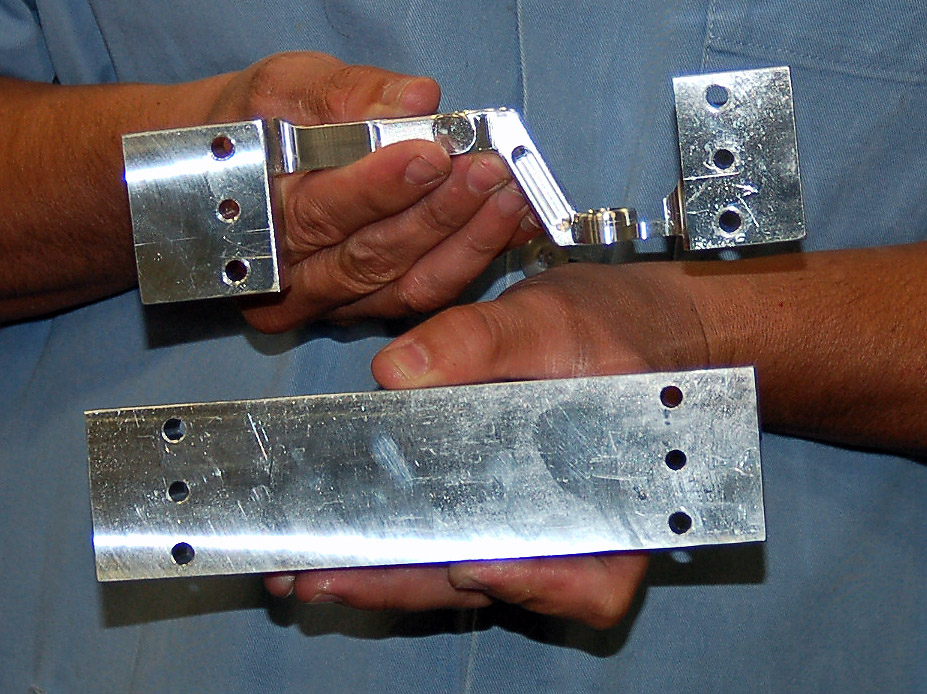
Talons get new aileron levers

A newly milled T-38 aileron lever is compared to the original block of aluminum. The end pieces are eventually removed in the five-step manufacturing process. The New Manufacturing and Repair Division of the 532nd Commodities Maintenance Squadron milled more than 1,000 levers for the Air Force's fleet of T-38s.